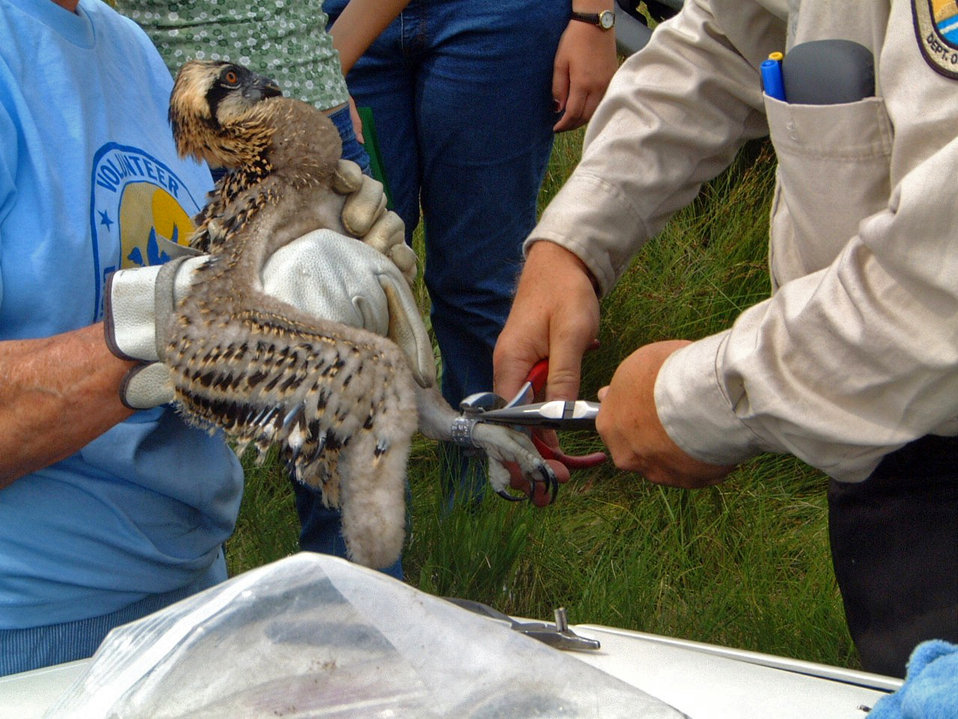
Banding a young osprey

Volunteer banding a young 6-week old osprey at Prime Hook National Wildlife Refuge.